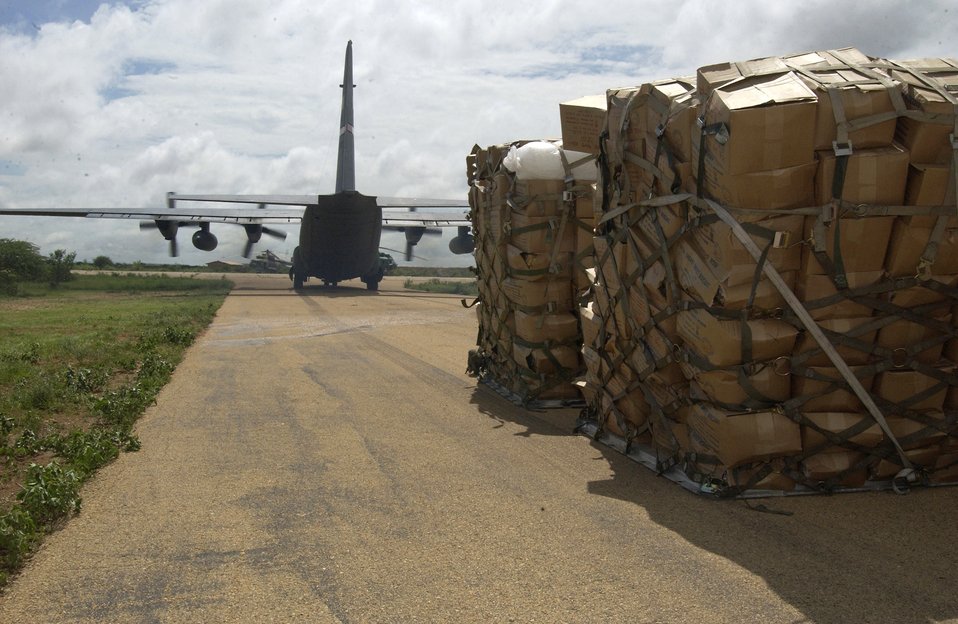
Ethiopia Flood Relief

A C-130H Hercules aircraft assigned to Combined Joint Task Force - Horn of Africa delivered humanitarian aid to flood victims in the Ogaden region of Ethiopia Nov. 10.